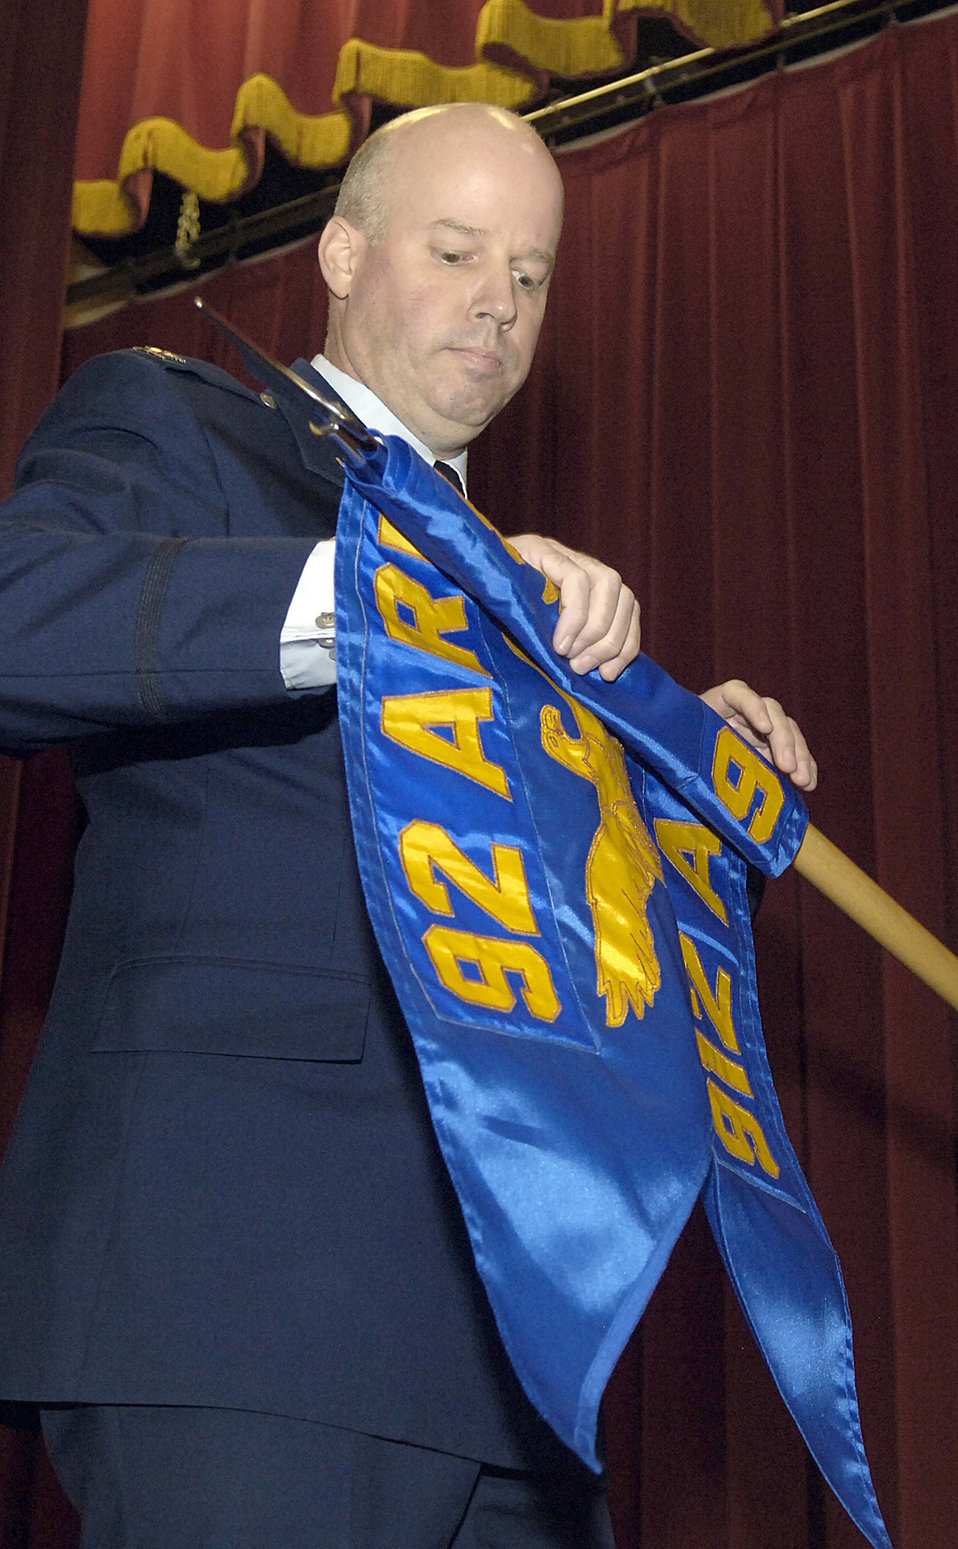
Fairchild reactivates squadron at March

Col. Paul H. Guemmer unveils the 912th Air Refueling Squadron guidon during a reactivation ceremony for the squadron Dec. 3, 2010, at March Air Reserve Base, Calif. As a facet of Total Force Integration, operationally the squadron will be part of the Air Force Reserve Command’s 452nd Air Mobility Wing while its parent unit, the 92nd Air Refueling Wing at Fairchild Air Force Base, Wash., will retain administrative control of the squadron. Colonel Guemmer is the 92nd ARW commander.